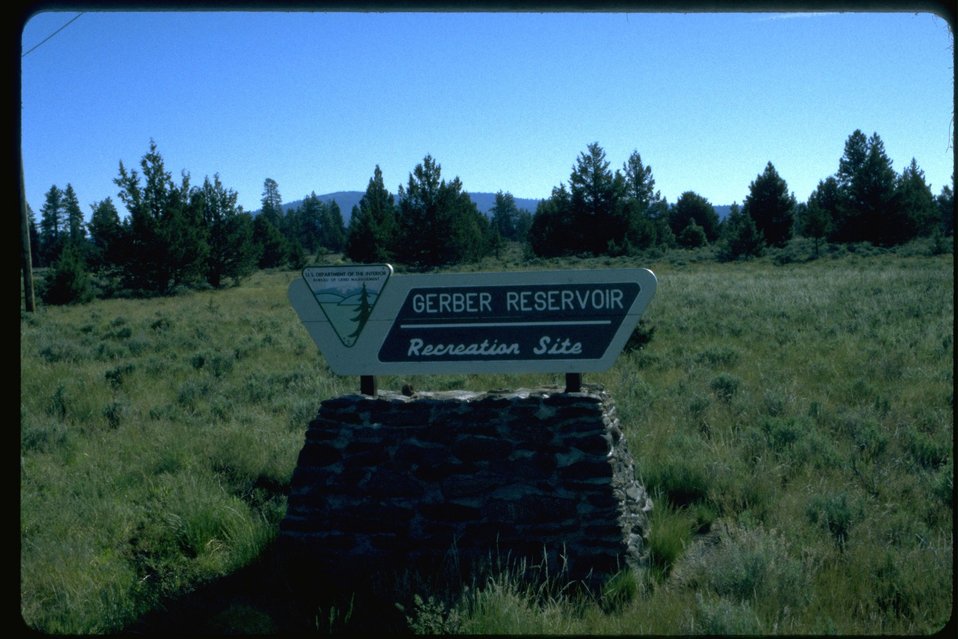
Medium shot of Gerber Reservoir Recreation Portal sign.